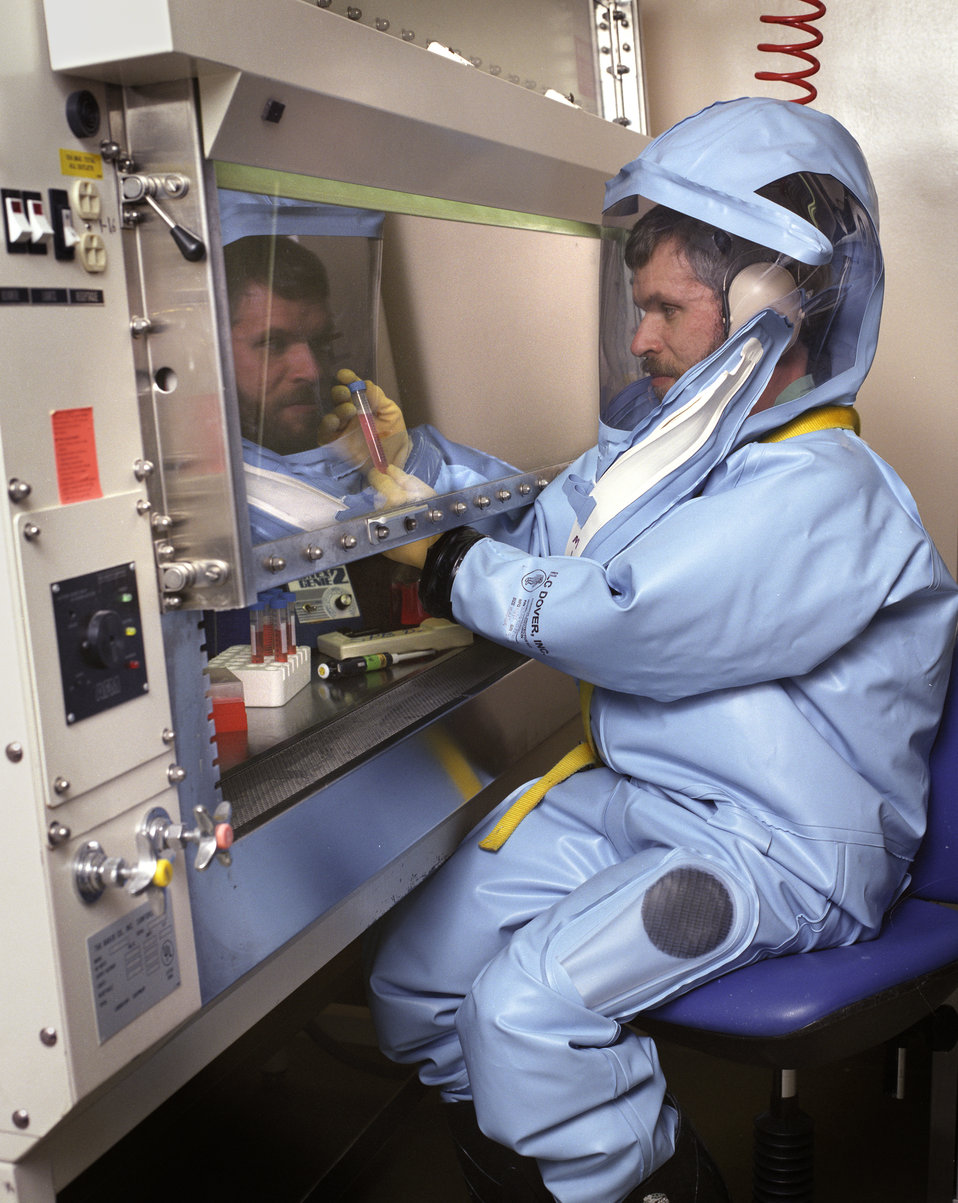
A CDC scientist conducts laboratory research in the Biosafety Level 4 laboratory, Atlanta, GA.